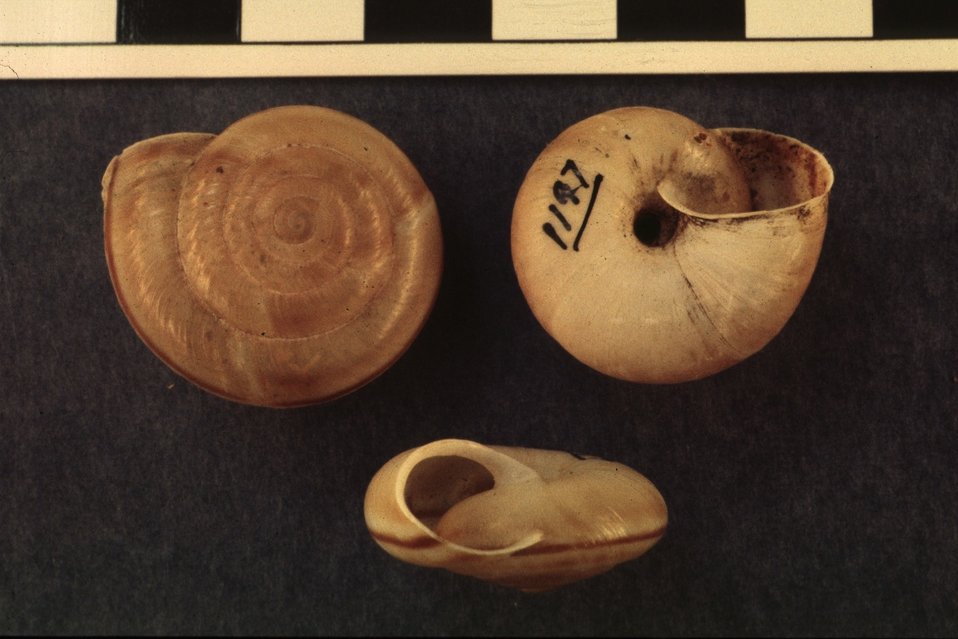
Shasta sideband (Mondenia troglodytes troglodytes).